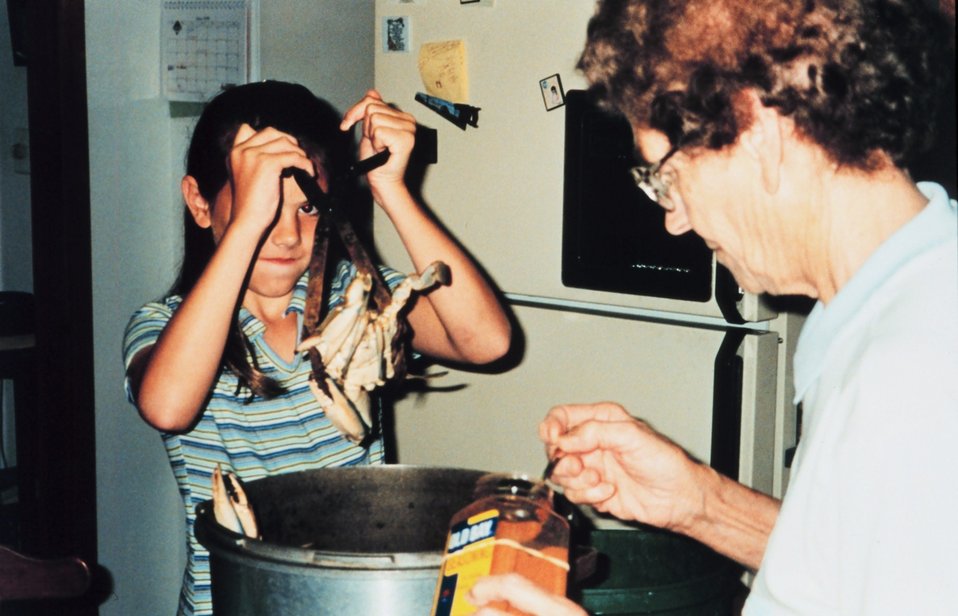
Preparing Maryland Blue Crabs for the dinner table. Passing on the knowledge of the Chesapeake Bay from generation to generation.